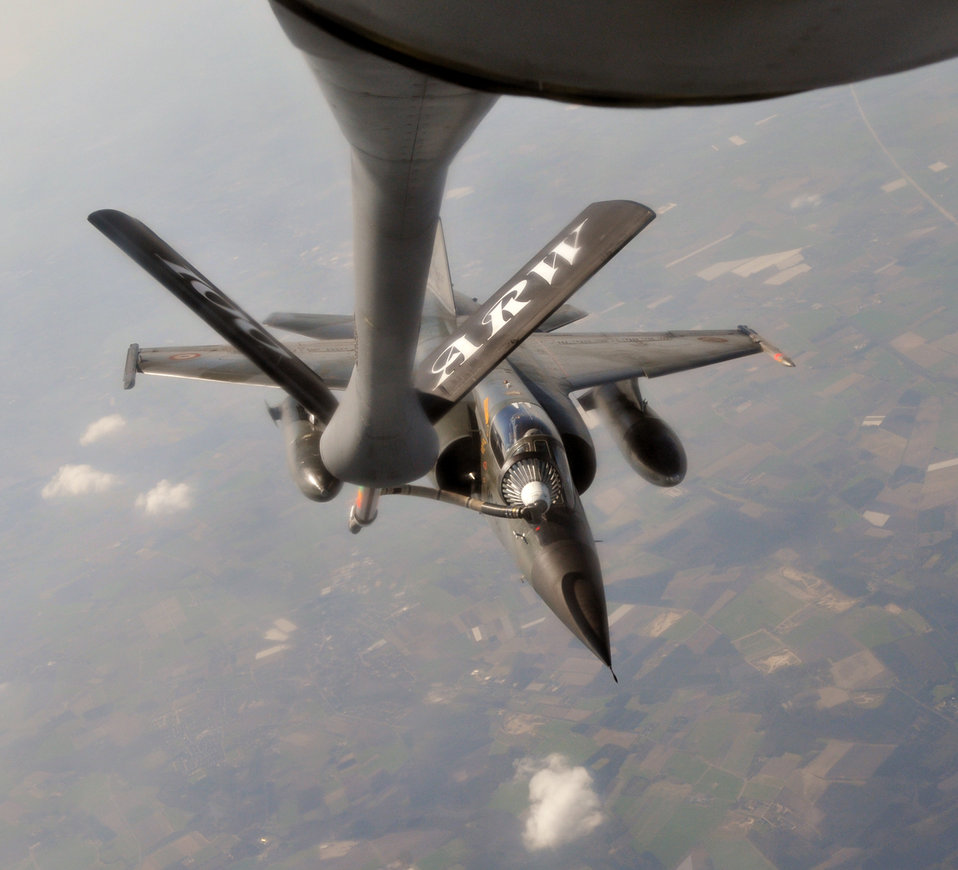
A French Mirage F-1 fighter refuels off of an 100th Air Refueling Wing KC-135 Stratotaker during exercise Brilliant Ardent April 14, 2010, over Europe.